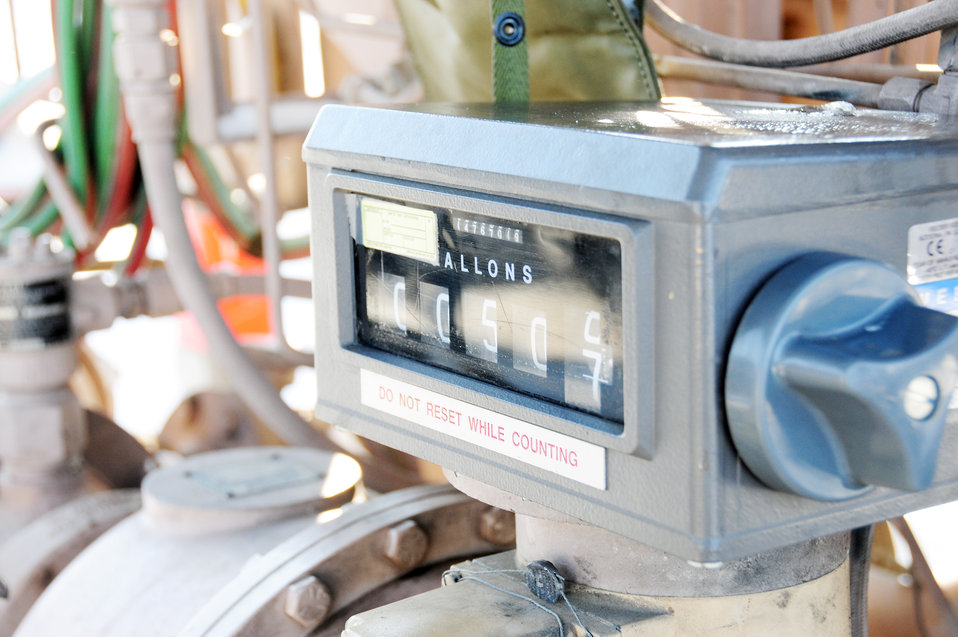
POL flight starts what could be 'benchmark' process

The 376th Expeditionary Logistics Readiness Squadron petroleum, oil and lubricants flight here was the first in the area of responsibility to implement a new pre-filter system for fuel which will save time and money and deliver better, cleaner fuel to the aircraft the KC-135 refuels.